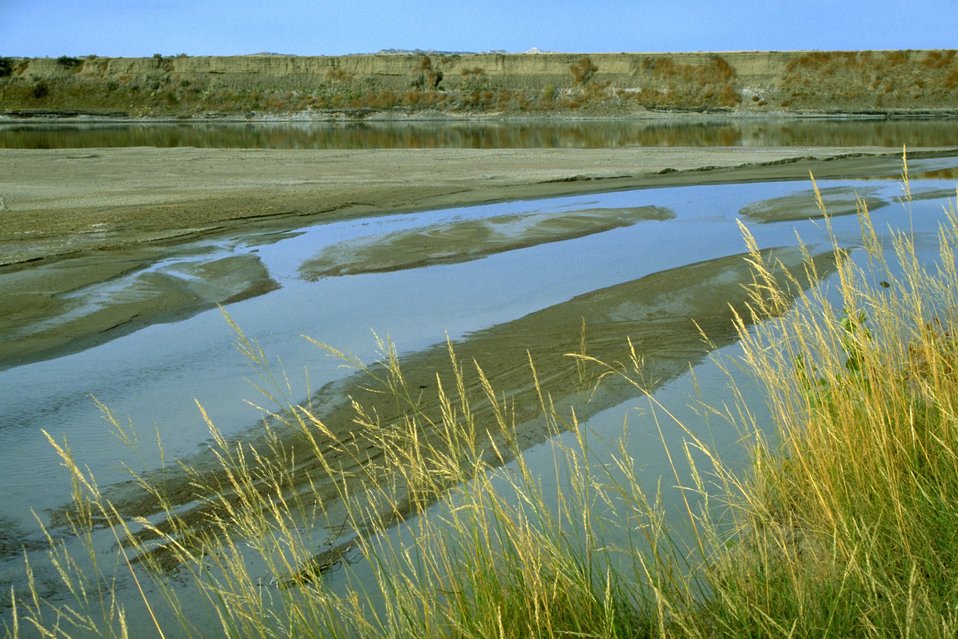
Confluence of Yellowstone and Powder Rivers